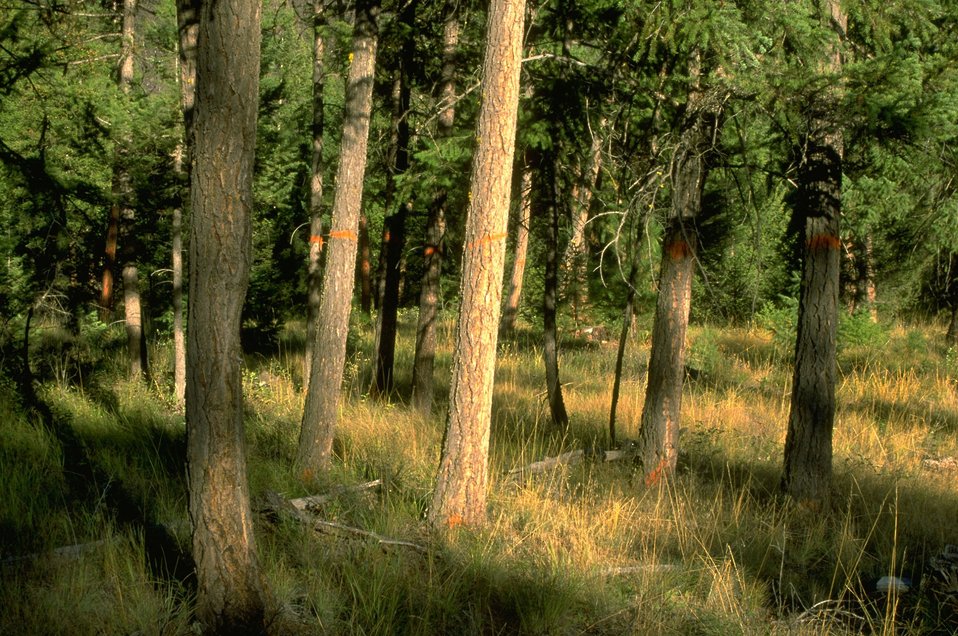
Fir trees marked for harvest to help restore old growth pine along the Blackfoot River